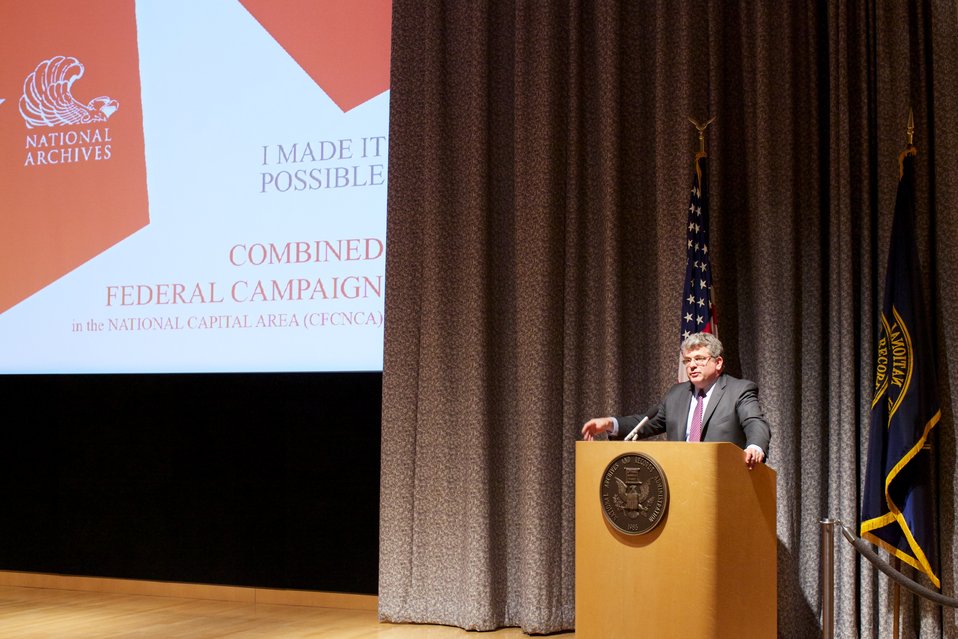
CFC Recognition Event